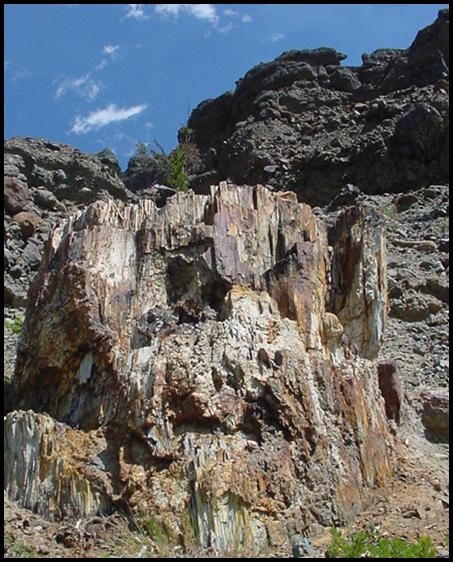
Petrified Forest

A fossilized tree stump sits in the Gallatin National Forest of Montana’s Northern Rockies. The stump is part of a huge forest that was buried in a volcanic eruption 50 million years ago. Gallatin National Forest was established in 1899 and is part of the Greater Yellowstone Area. The forest covers over 1.8 million acres and spans six mountain ranges.